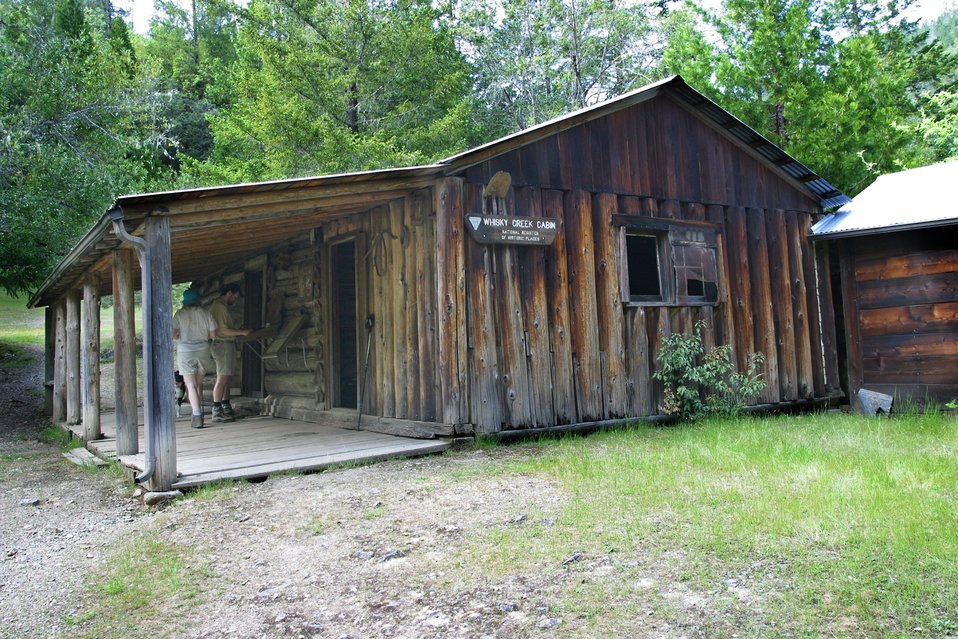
Whisky Creek Cabin along the Wild section of the Rogue River from Grave Creek to Foster Bar. 3100 cfs at Grants Pass and 5300 at Agness.